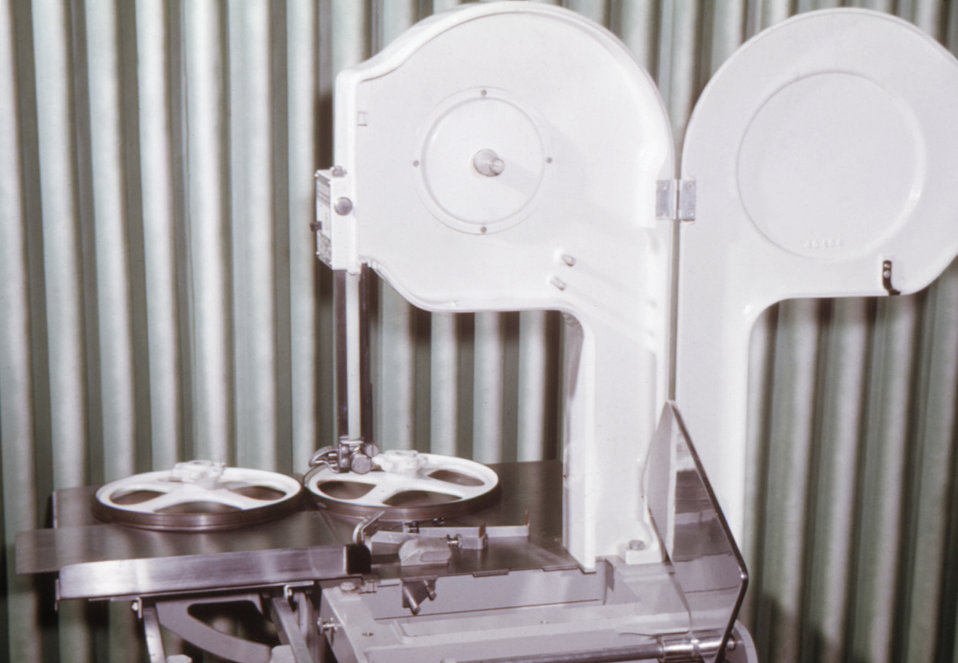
This photograph taken during a public health inspector's rounds of a 1975 migrant worker camp shows a properly cleaned meat saw.